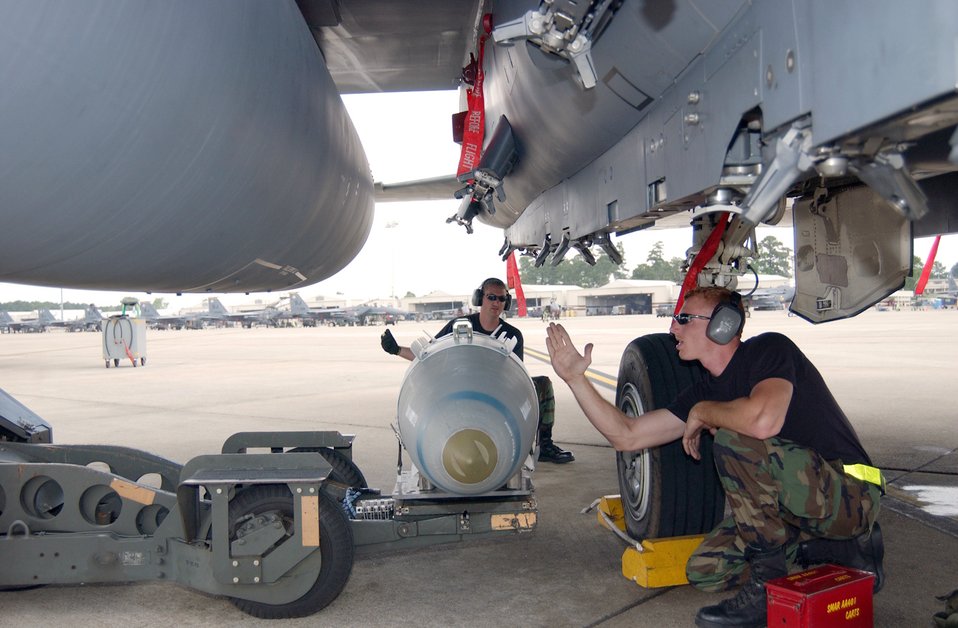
More strike in the Eagle

SEYMOUR JOHNSON AIR FORCE BASE, N.C. -- Staff Sgt. Bryon Russell (left) and Senior Airman Josiah Chrisley load a joint direct attack munition onto an F-15E Strike Eagle on June 10. The Airmen are assigned to the 336th Aircraft Maintenance Unit.